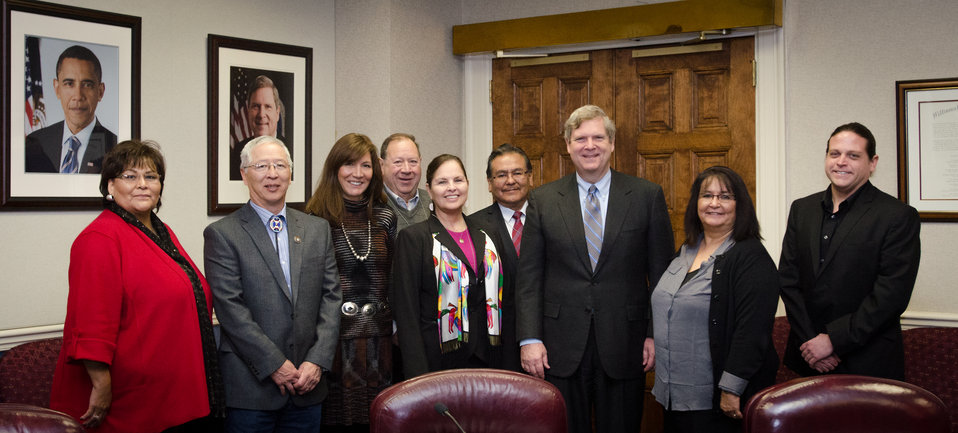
Southwestern Indian Polytechnic Institute President Sherry Allison, Albuquerque, NM; Little Big Horn College, President David Yarlott, Jr., Crow Agency, Montana; American Indian Higher Education Consortium President/CEO Carrie Billy, Alexandria, VA; Bay Mills Community College President Michael Parish, Brimley, MI; Cankdeska Cikana Community College President Cynthia Lindquist, Fort Totten, ND; Navajo Technical College President Elmer Guy, Crownpoint, NM, Agriculture Secretary Tom Vilsack; Blackfeet Community College President Billie Jo Kipp, Browning Montana; and Nebraska Indian Community College President Micheal Oltrogge, Macy, NE meet during the U.S. Department of Agriculture and American Indian Higher Education Consortium Leadership Group Winter Meeting , at the USDA Whitten Building, Williamsburg Room, in Washington D.C., on Friday, Feb. 8, 2013.